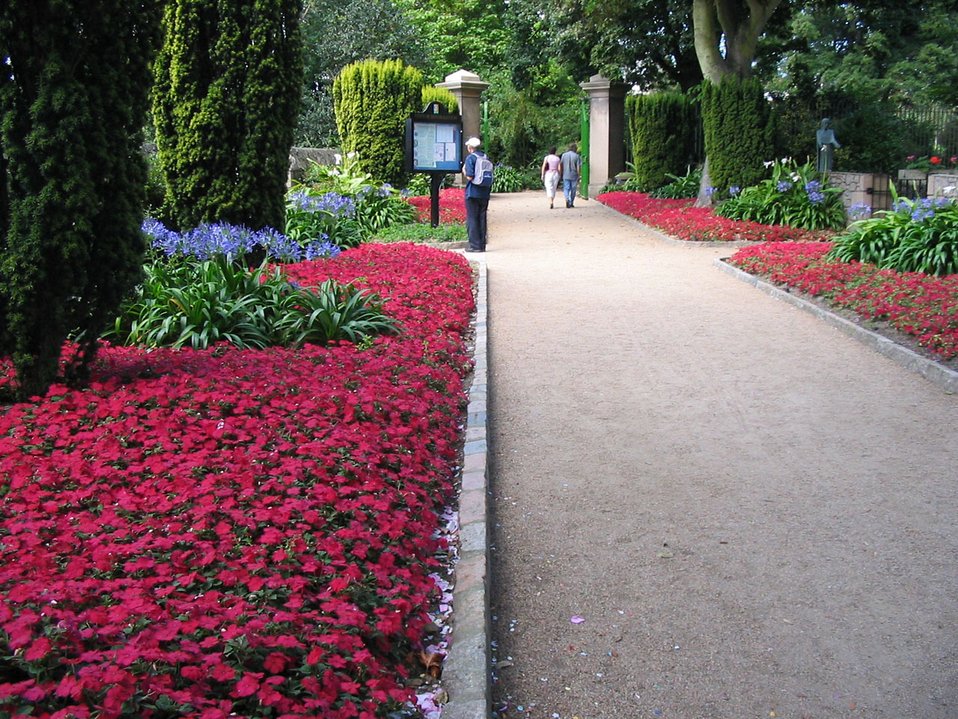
Park in st helier

A park in st helier - jersey island.